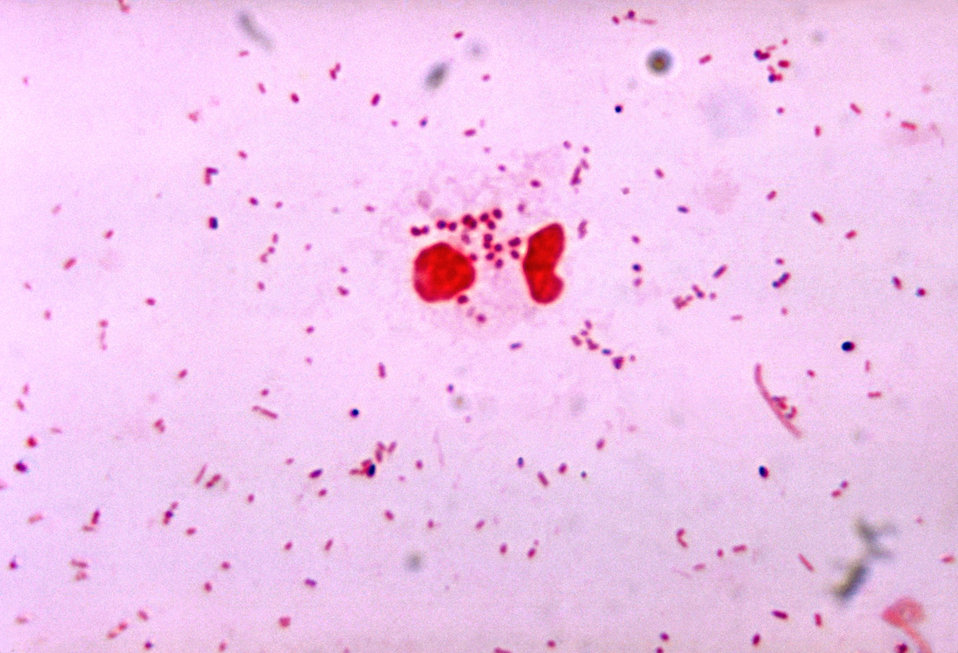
This is a photomicrograph of Neisseria gonorrhoeae the presence of mixed bacterial flora. Note the necrotic neutrophil.